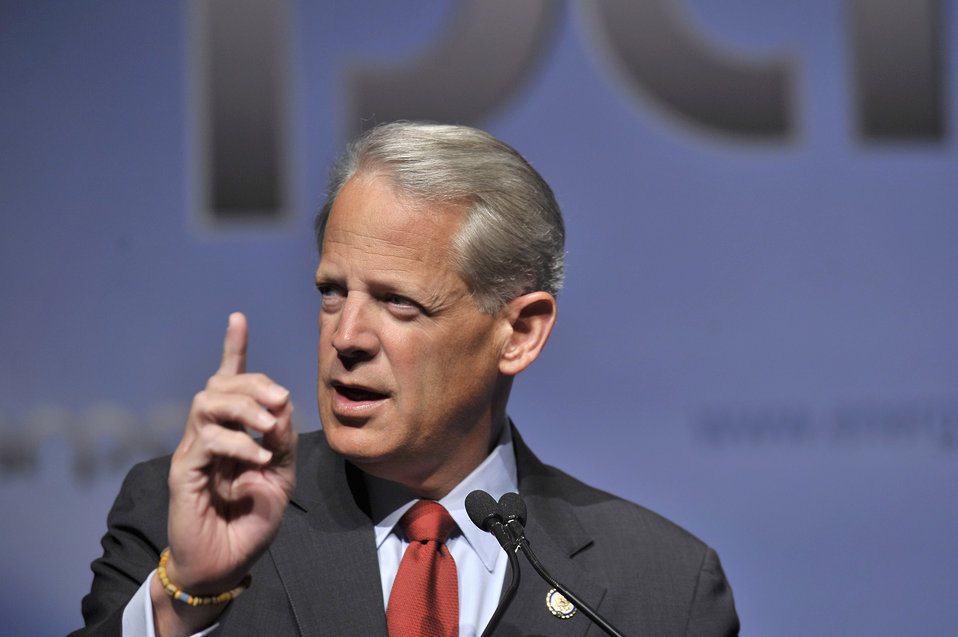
ARPA-E Energy Innovation Summit 2011, 82 of 83

Representative Steve Israel (D-NY).